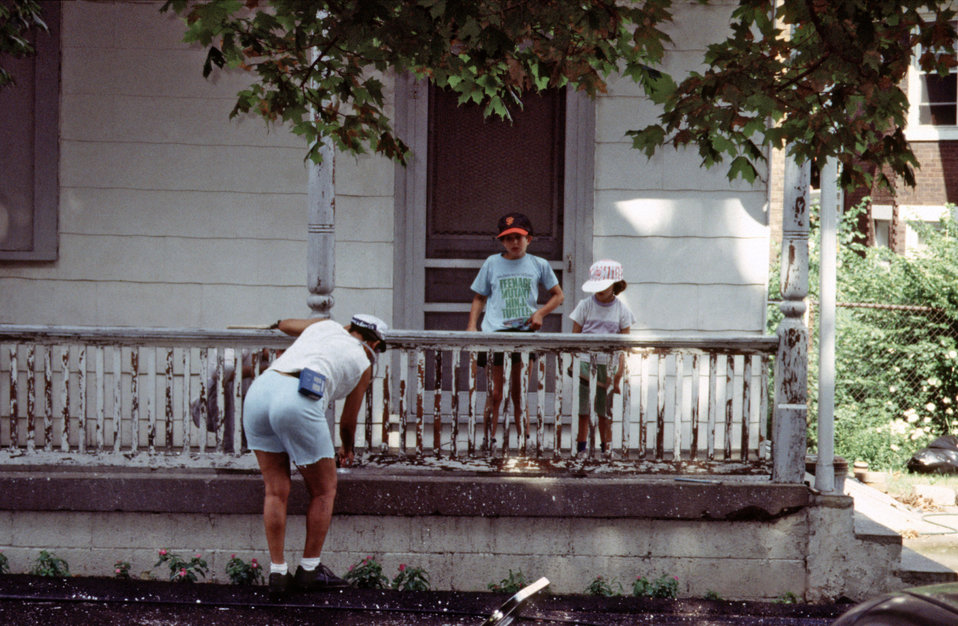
This photograph depicted a volunteer worker manually dry scraping lead-based paint from a porch railing as she prepared it to be repainted while nearby children watched.